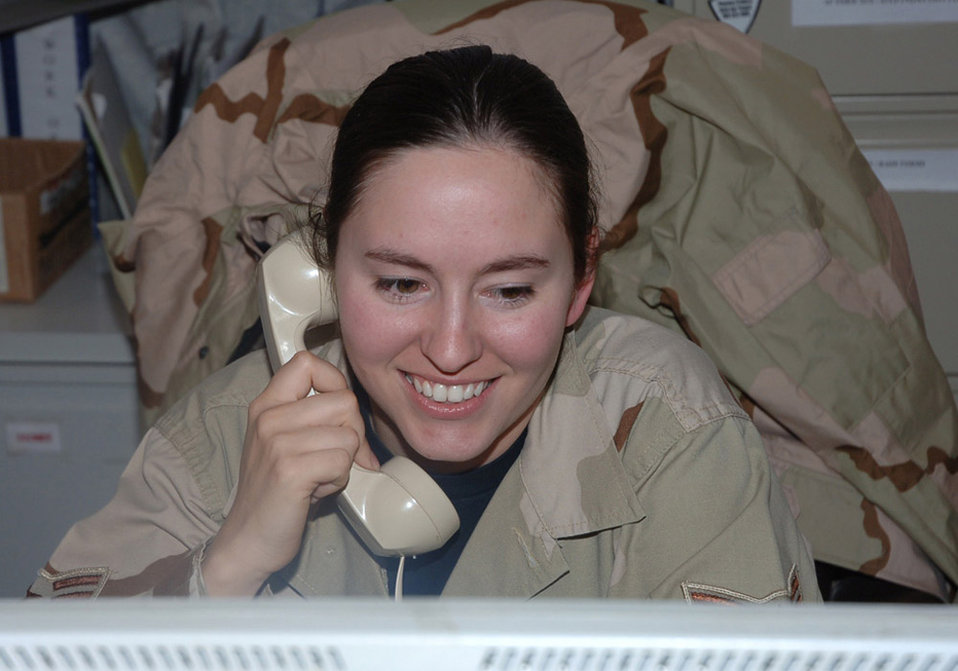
Presidential call

BAGHDAD, Iraq (AFPN) -- Airman 1st Class Sarah Sullivan talks with President George Bush Thanksgiving afternoon. Airman Sullivan is an airfield management operations supervisor with the 447th Expeditionary Operations Support Squadron. She is deployed from Seymour-Johnson Air Force Base, N.C.